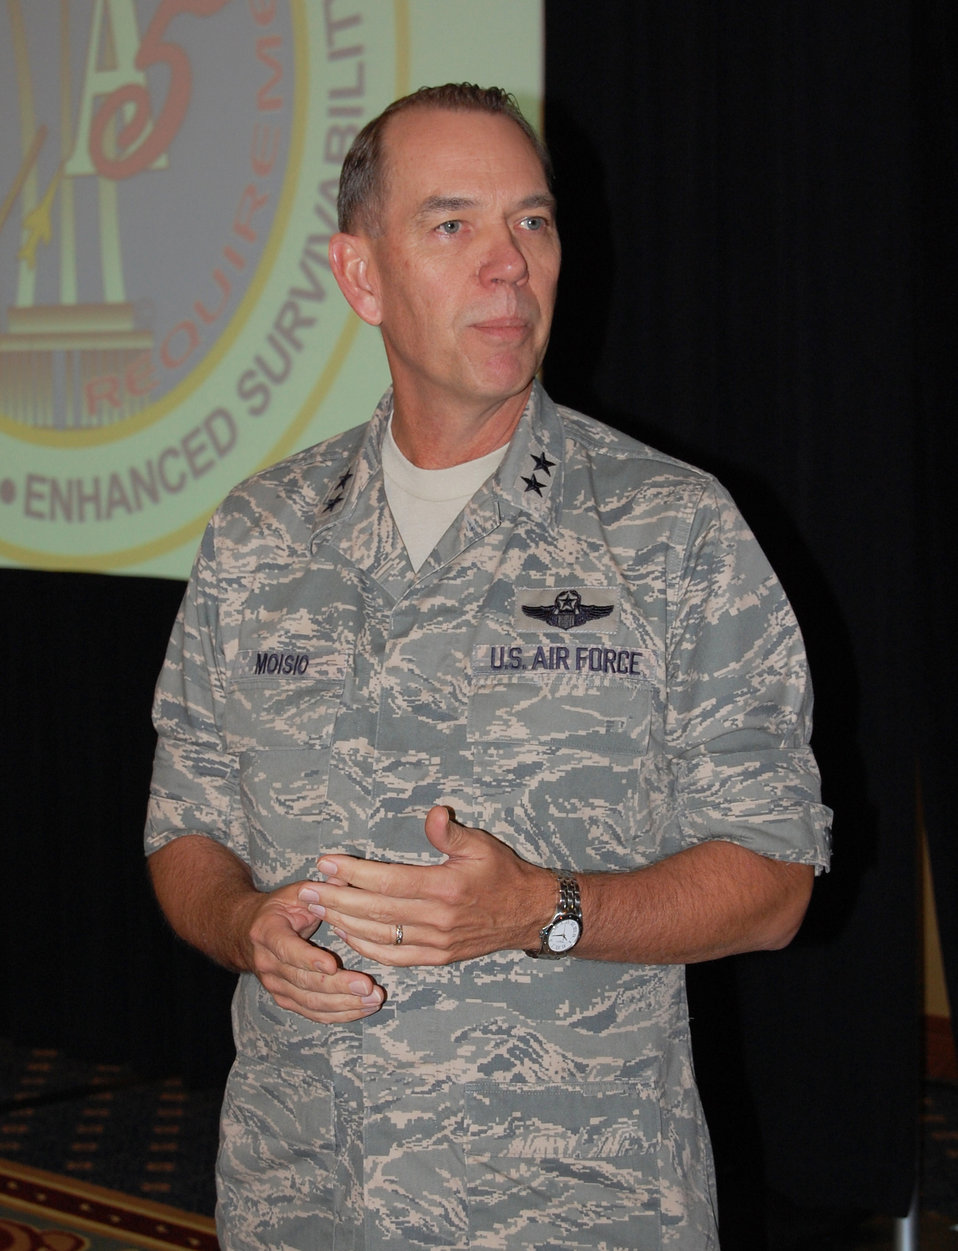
Domestic Operations conference a 'historic collaboration' for Air Guard

Maj. Gen. Patrick J. Moisio addresses attendees at the Domestic Operations Essential-10 Requirements conference Sept. 25, 2009, in Washington D.C. Participants briefed General Moisio and other Air National Guard leaders on strategic requirements by the Air Guard to fulfill domestic emergency missions. General Moisio is the deputy director of the Air National Guard.